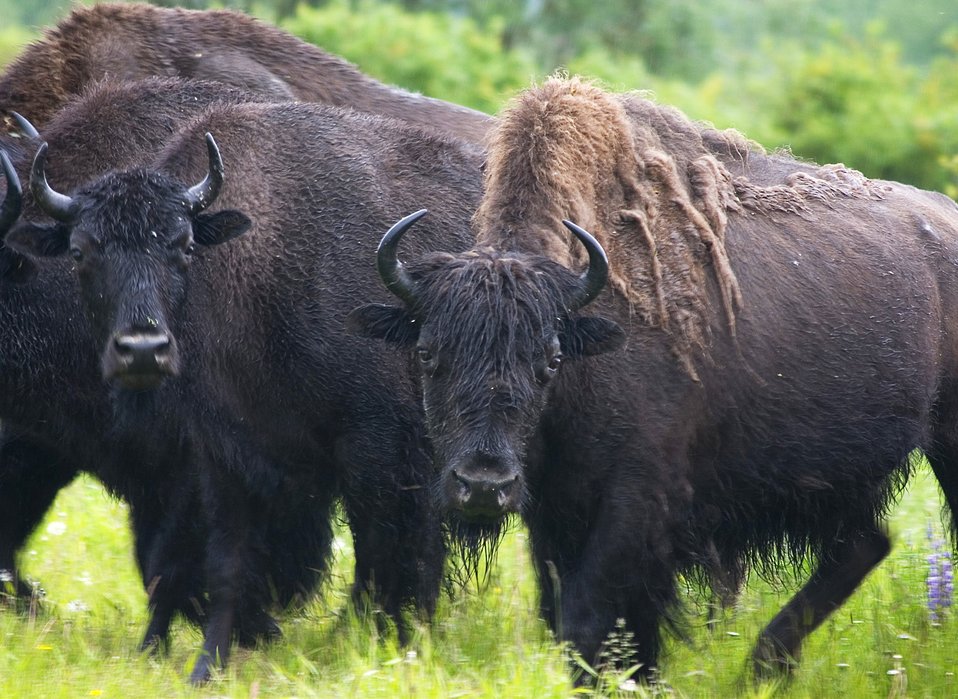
Wood bison are the largest native land mammals in the Western Hemisphere, 10 to 15% heavier than plains bison. Bulls are slightly larger than cows and average around 1,800 pounds, but can get up to 2,000 pounds. Both males and females have short black horns, but the female’s horns are straight and the male’s curve slightly inward. Males can reach 12.5 feet long and almost 6 feet tall. The shoulders are massive and humped, with the head carried low. They can live up to 22 years in the wild, and more than 30 years in captivity.
The wood bison differs from the plains bison in several ways. The animals are larger and darker in color, with a taller, square hump, smaller, more pointed beard, and long, straight hair on the forehead (as opposed to frizzy hair). Also, the wood bison’s cape does not form a distinct boundary behind the shoulder.